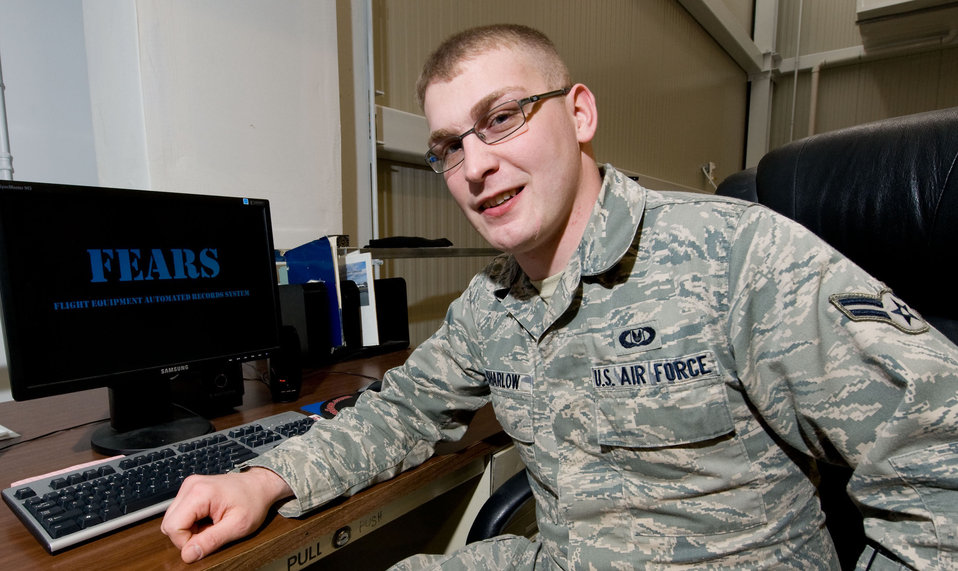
Airman creates important database

Airman 1st Class Chris Sharlow, 436th Operations Support Squadron Aircrew Flight Equipment journeyman, poses for a photo at Dover Air Force Base, Del., on Nov. 30, 2012. He is the creator of a new computer program used to easily track thousands of accountable aircrew equipment items. Sharlow's program is known as the Flight Equipment Automated Records Systems (FEARS) and is being used to ensure tracking and on-time inspections of items critical to safe, efficient mission accomplishment.